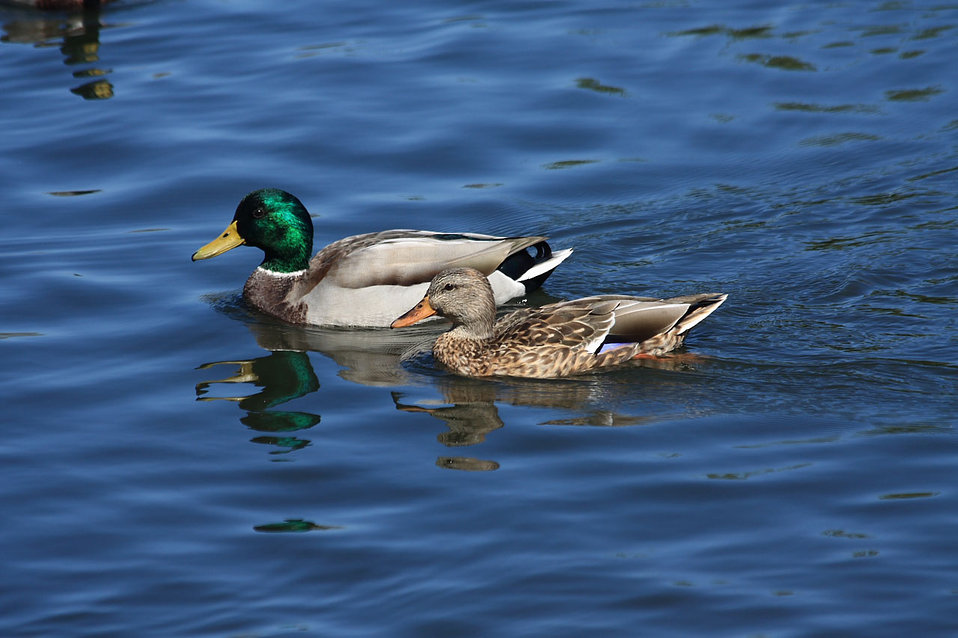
Pair of swimming mallard ducks

A male and female mallard duck (anas platyrhynchos) swimming in a pond.